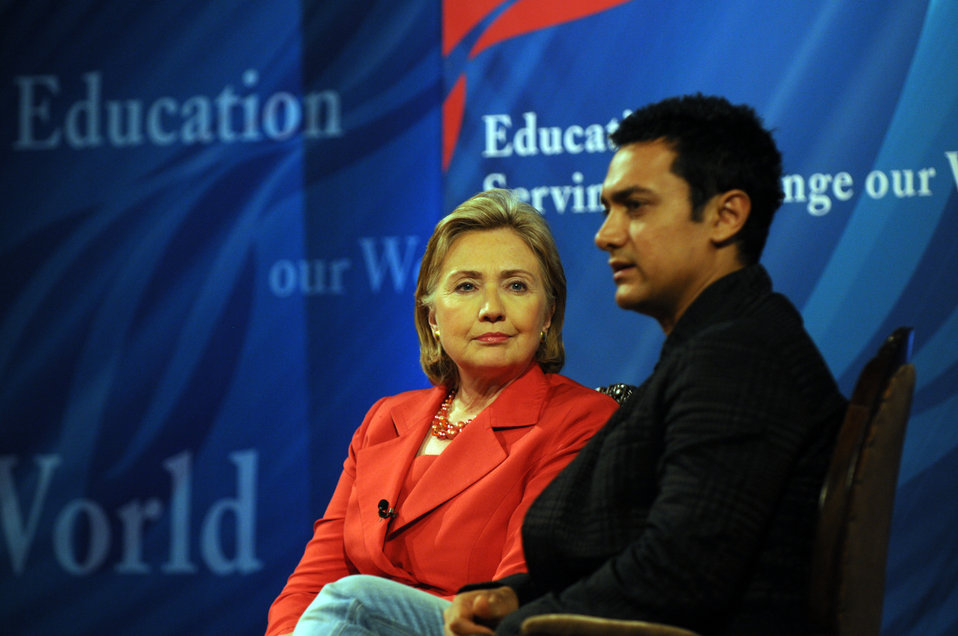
Secretary Clinton Speaks About Education and Community Service

U.S. Secretary of State Hillary Rodham Clinton and Bollywood celebrity Aamir Khan discuss education and community service with students at St. Xavier’s College, Mumbai, India July 18, 2009.